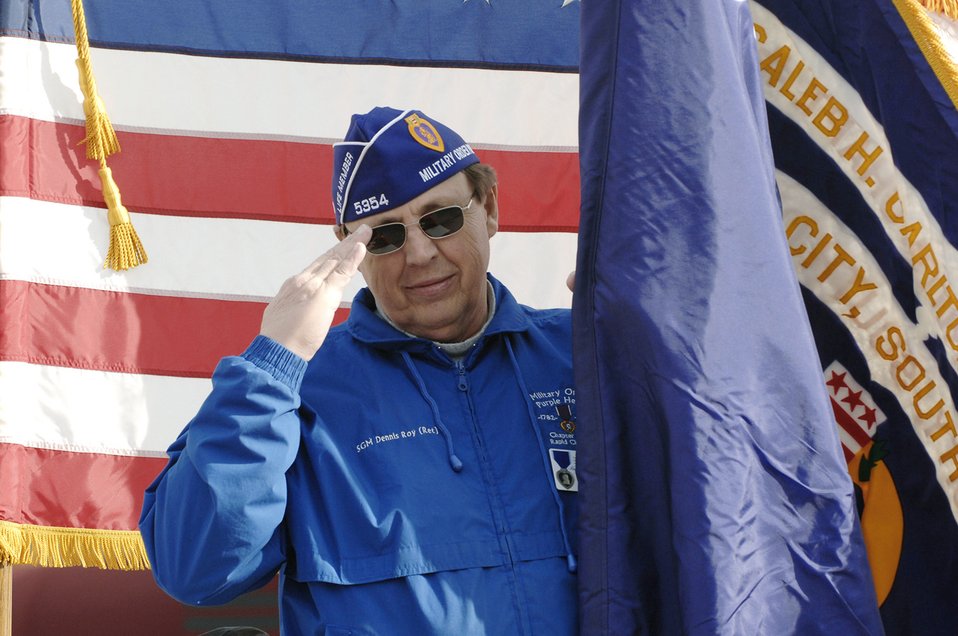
Attention!

U.S. Army retired Sgt. Maj. Dennis Roy salutes during a Veterans Day parade in downtown Rapid City, S.D., Nov. 11, 2007. Rapid City hosted this parade down Main Street in honor of all those who have served and are currently serving in the United States armed forces. Sergeant Roy is a veteran and member of the Military Order of the Purple Heart, Chapter 5354.